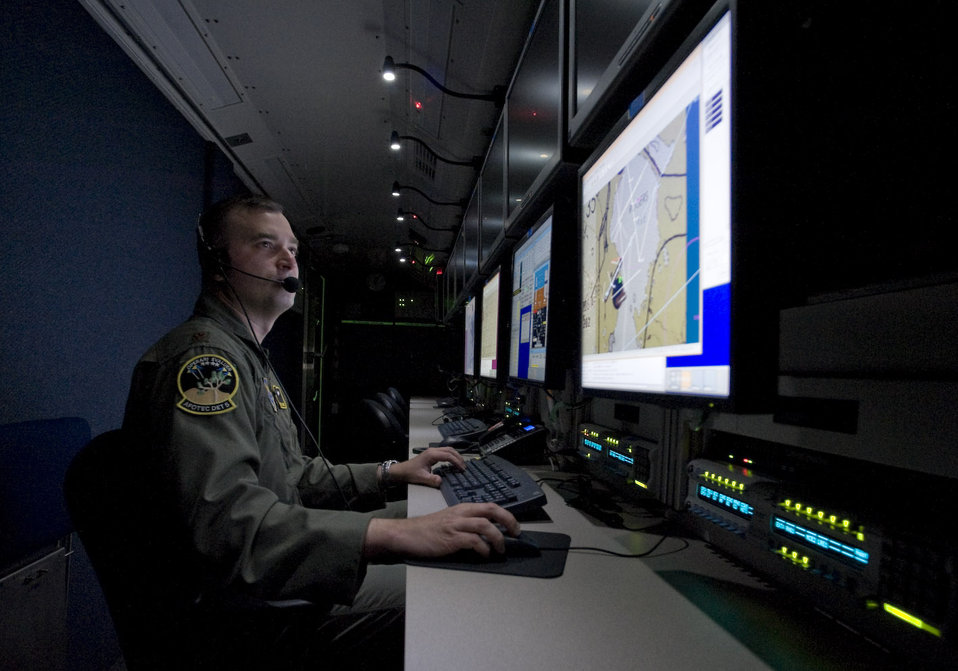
Controlling the skies

Maj. Paul Wojtowicz monitors information sent from a Global Hawk unmanned aircraft. Major Wojtowicz is a test division unmanned aircraft systems pilot for the Air Force Operational Test and Evaluation Center's Detachment 5 at Edwards Air Force Base, Calif.